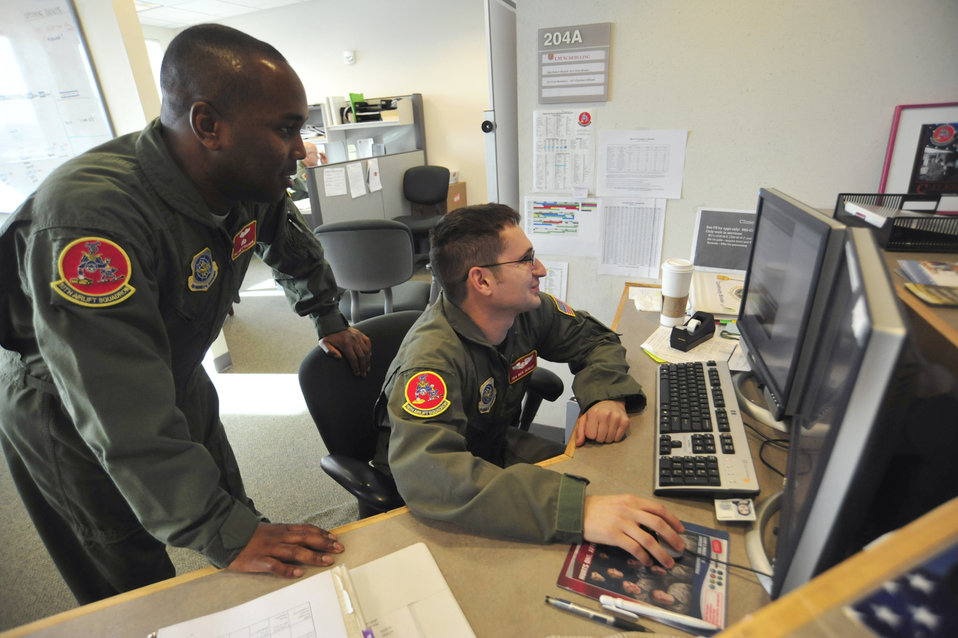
Understanding life as a loadmaster

(From left) Tech. Sgt. Ron Strayhorne and Senior Airman Nicholas Hebert discuss upcoming missions and training requirements Feb. 9, 2011, at Joint Base Lewis-McChord, Wash. Loadmasters are responsible for loading and off-loading aircraft functions and performing pre-flight and post-flight of aircraft and aircraft systems. Both Airmen are loadmasters assigned to the 10th Airlift Squadron.